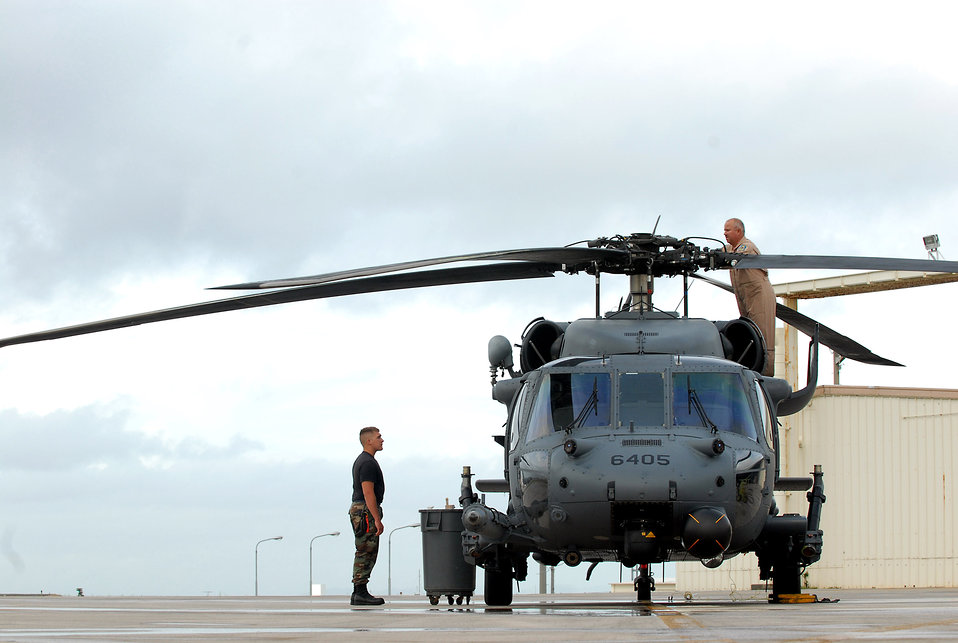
Typhoon Nari heads for Okinawa

Members from the 33rd Rescue Squadron prep a HH-60 Pave Hawk for bed down during Typhoon Nari preparation Sept. 14 at Kadena Air Base, Japan. Base members prepared for the typhoon by moving jets and equipment from the flightline into protective aircraft shelters and evacuated many aircraft to locations throughout the Pacific. The typhoon is scheduled to hit the island the evening of Sept. 14 with 45 knot winds gusting to 65 knots.